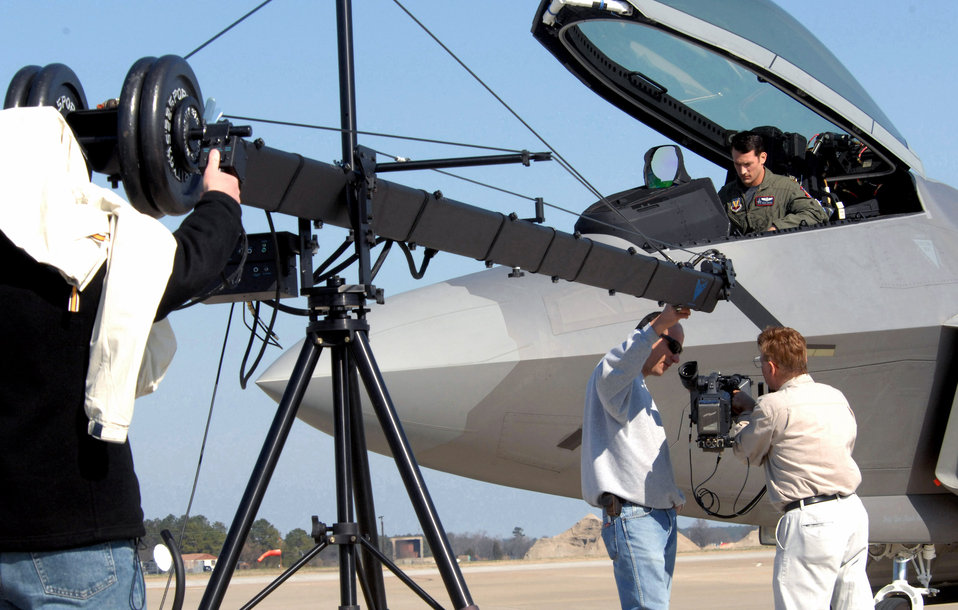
Discovery Channel

The Discovery Military Channel films an episode March 11 at Langley Air Force Base, Va. The episode, which is part of the series